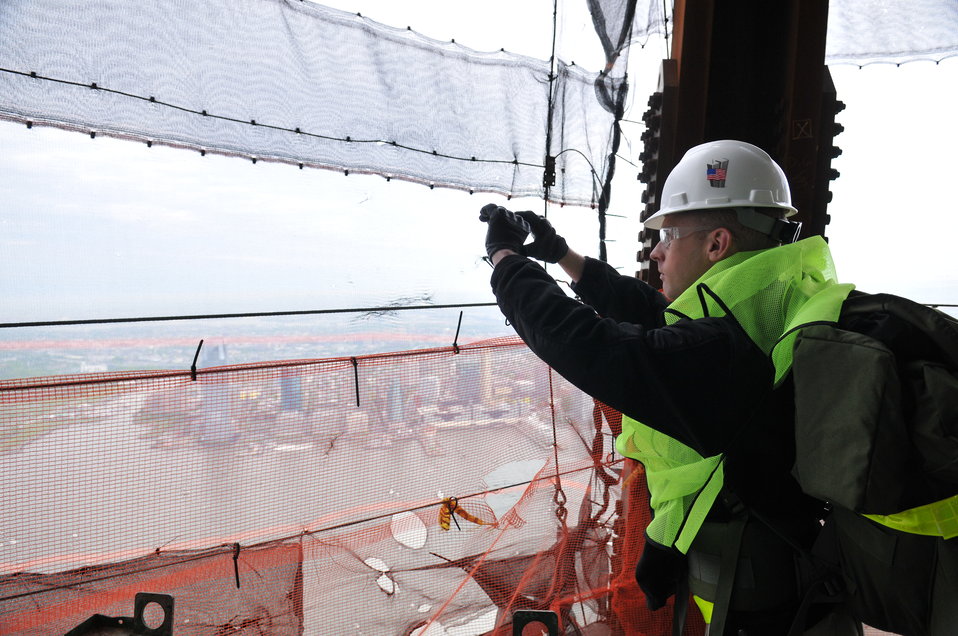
Airmen remember fallen air advisors

Lt. Col. J.D. Holt takes pictures from the 90th floor of the new One World Trade Center in New York City on April 26, 2012, before the Air Advisor Memorial Ruck March. The memorial march was an approximately 90-mile relay from the One World Trade Center to Joint Base McGuire-Dix-Lakhurst, N.J. Each ruck team member carried a paver stone with a name of one of the nine air advisors who were killed April 27, 2011, in Kabul, Afghanistan.